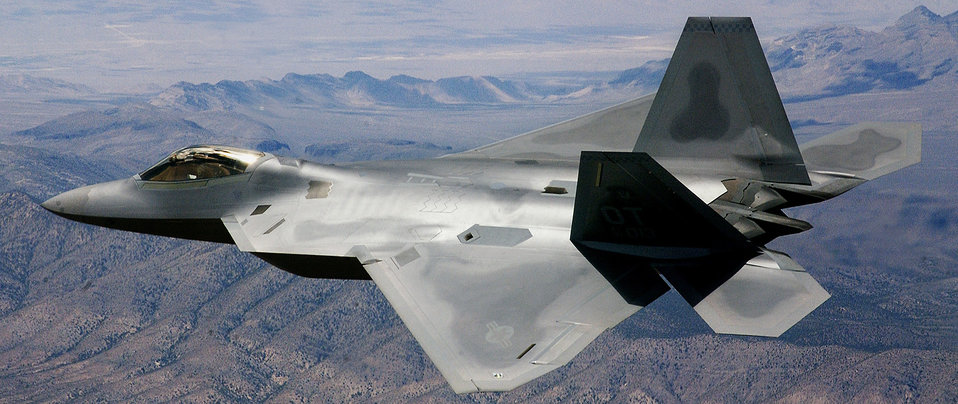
F/A-22 Raptor Test

OVER NEVADA -- An F/A-22 Raptor from Nellis Air Force Base, Nev., heads out for an operational test mission. The Raptor recently finished avionics engineering manufacturing development testing at Edwards Air Force Base, Calif., and surpassed 2,592 flight hours, pushing the aircraft one step closer to taking its place as the premiere weapon system of the U.S. Air Force.